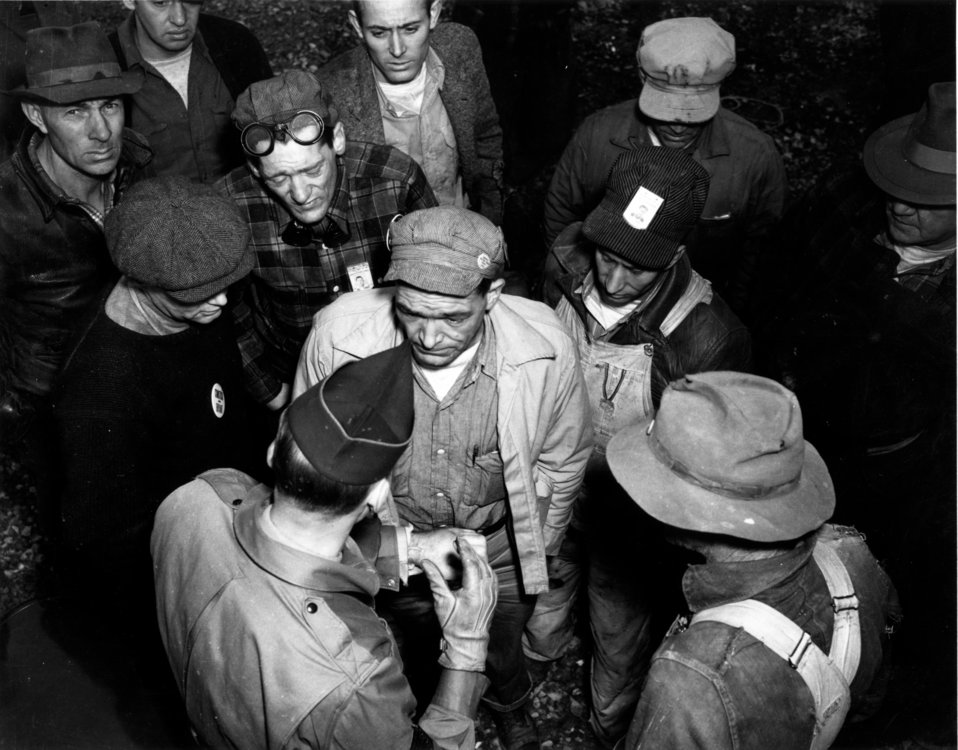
Daily Life at Oak Ridge